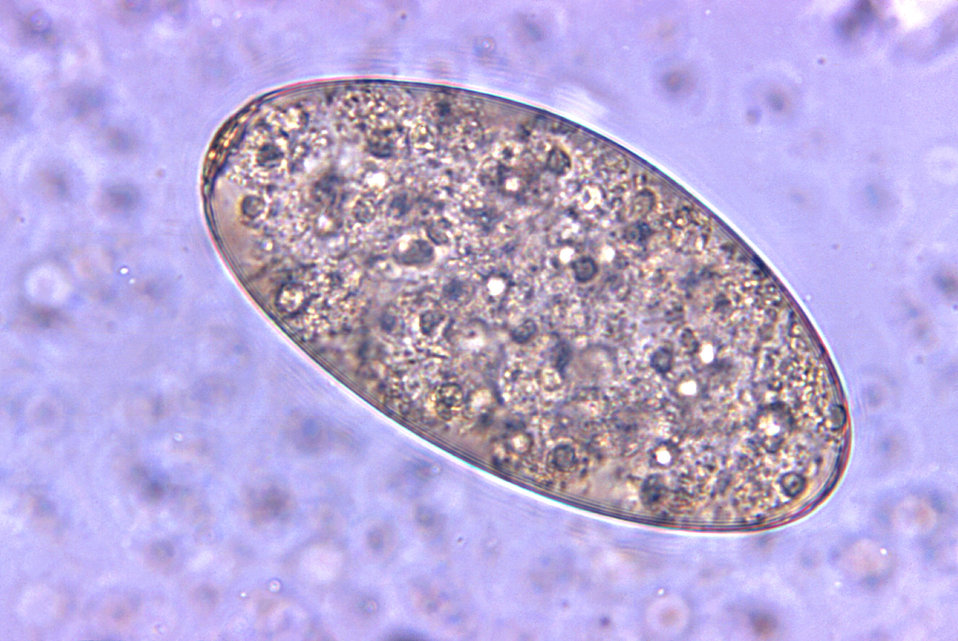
Magnified 500X, this photomicrograph revealed the presence of a Fasciolopsis buski trematode egg found in an unstained formalin-preserved stool sample. F. buski are the largest intestinal flukes found parasitizing human beings. These flukes inhabit Asia and the Indian subcontinent, especially in areas where humans raise pigs, and consume freshwater plants.